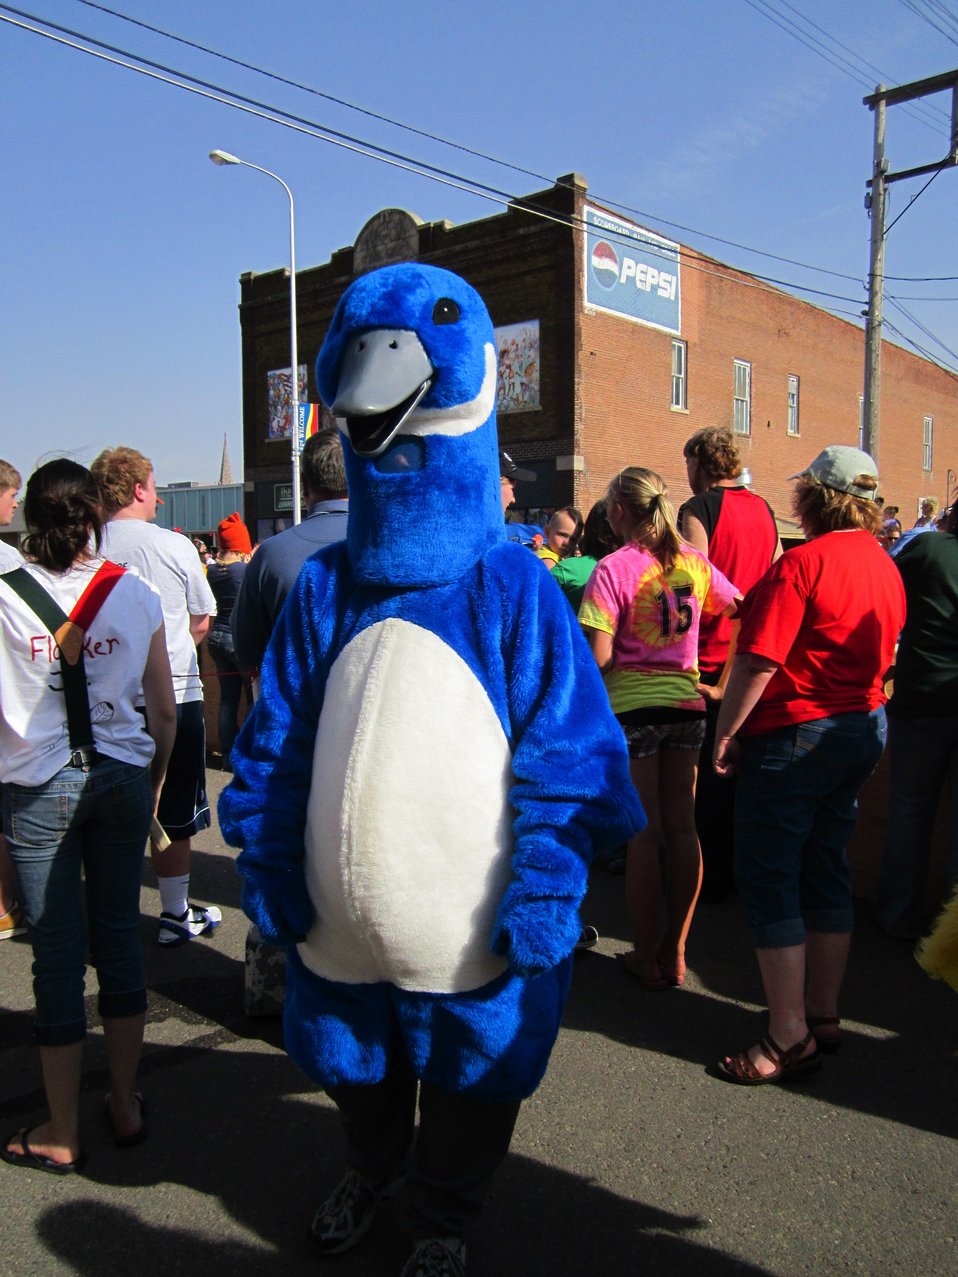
2012 Huron Turkey Races

Mascot races for our local turkey races. Biologist Brent Jamison was a good sport about it.